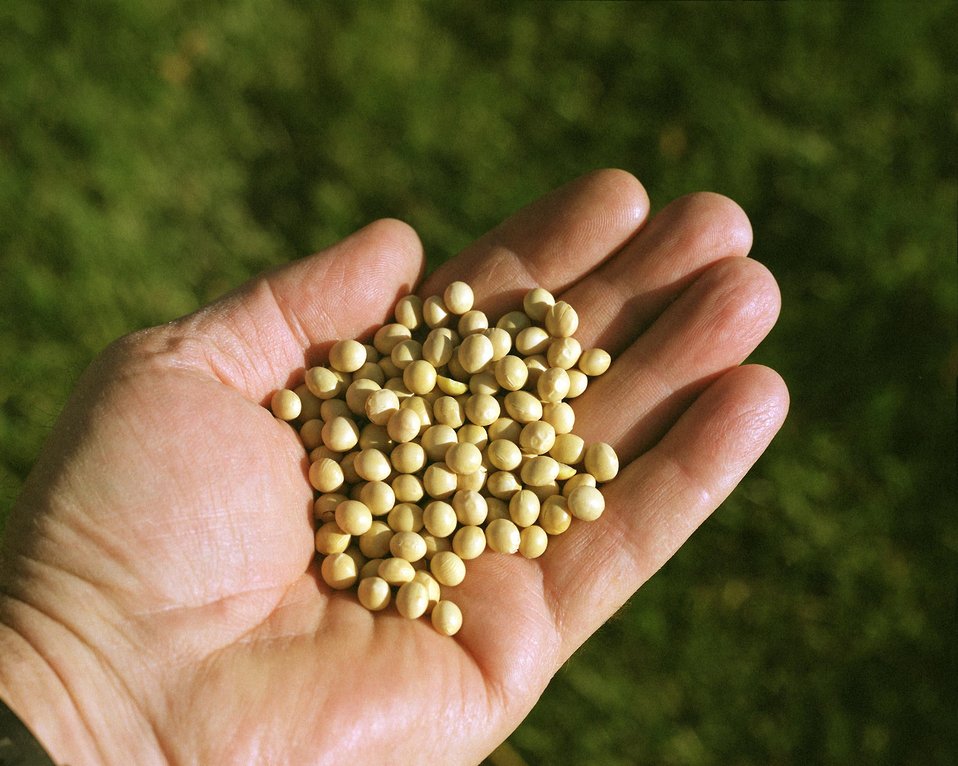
SOYBEANS.

CURRENT U.S. BIODIESEL PRODUCTION IS PRIMARILY FROM OIL FROM SOYBEANS OR RECYCLED RESTAURANT COOKING OIL. CLEANER BURNING AND RENEWABLE BIODIESEL IS MOST OFTEN BLENDED AT 20% WITH PETROLEUM DIESEL.